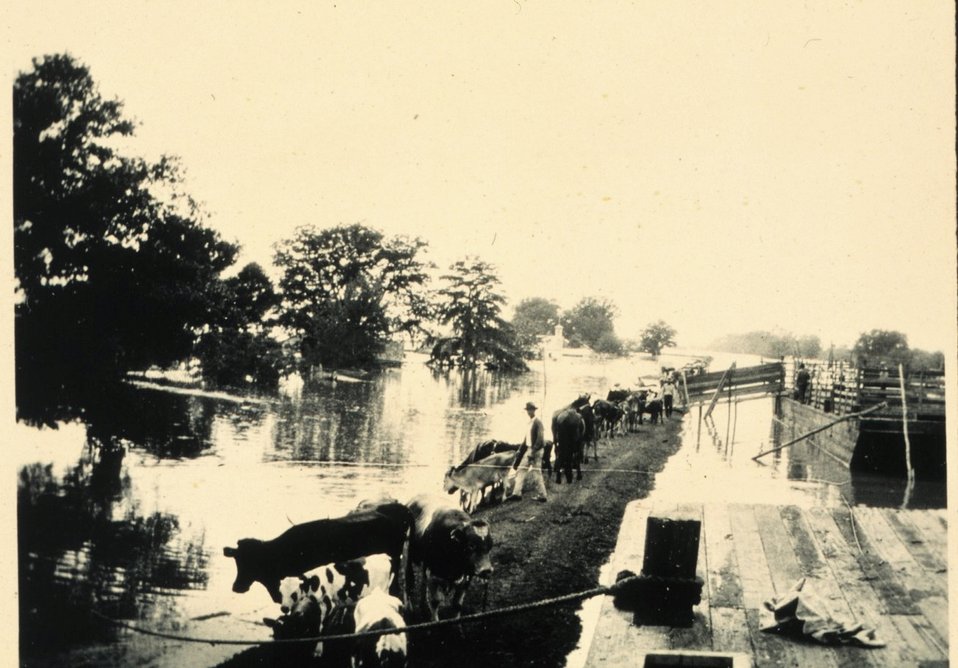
Flooding along the Mississippi River. Refugees from the flood maintain their livestock on the top of a levee